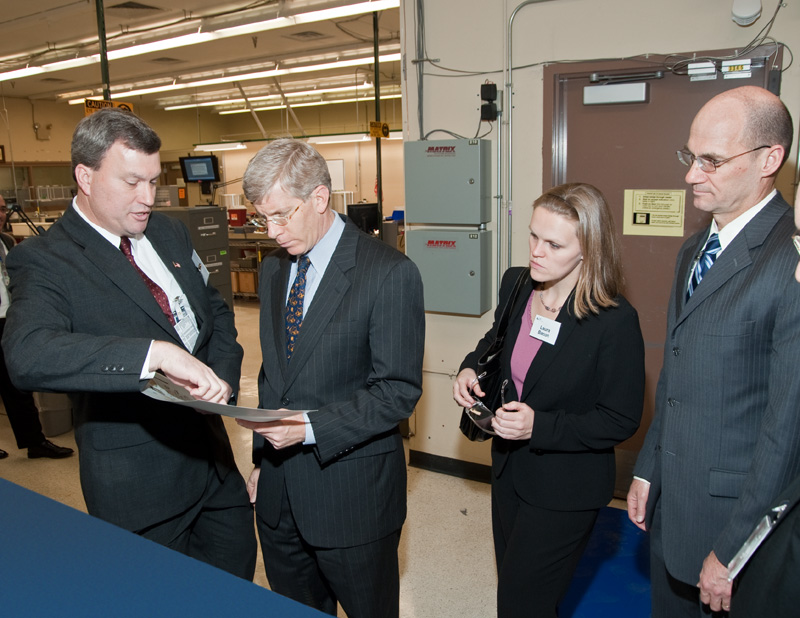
The Deputy Secretary and Administrator toured the Arming Fuzing & Firing (AF&F) and Stronglink Mechanisms areas at KCP.